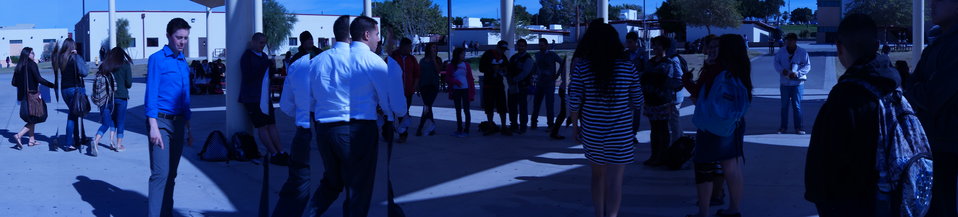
Nationa Drug Facts Week - KOFA HS

The Drug Demand Reduction Program out of Yuma Arizona held numerous events at local schools to support NIDA's National Drug Facts Week, Jan. 27-Feb. 2 2014. Teens participated in drug awareness games, and helped to Shatter the Myths about teen substance abuse.